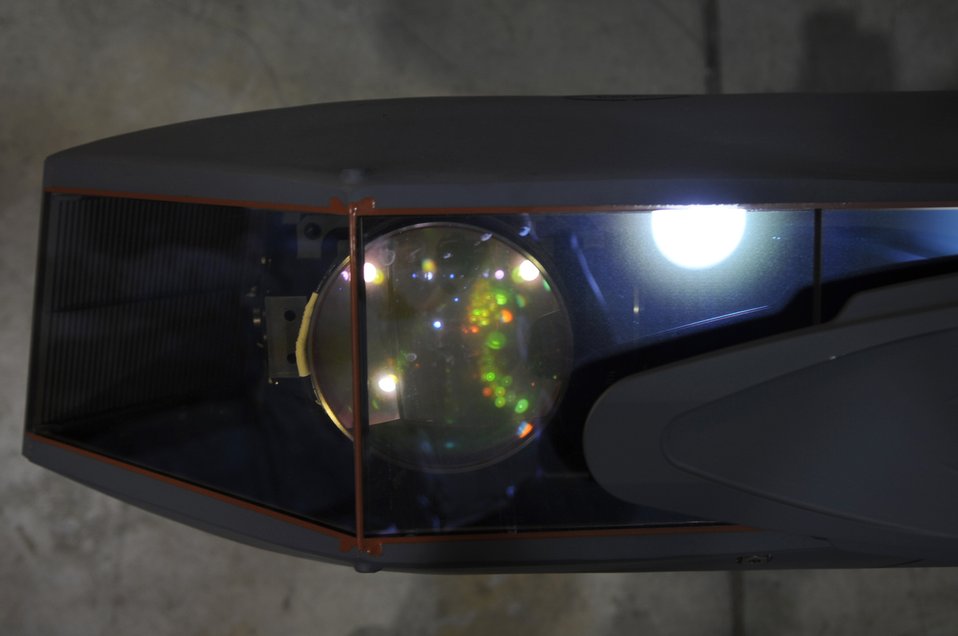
Sniper pod

A Sniper Advance Targeting Pod is attached to the B-1B Lancer at Ellsworth Air Force Base, S.D., March 17. The sniper pod provides a clearer picture for a targeting area.